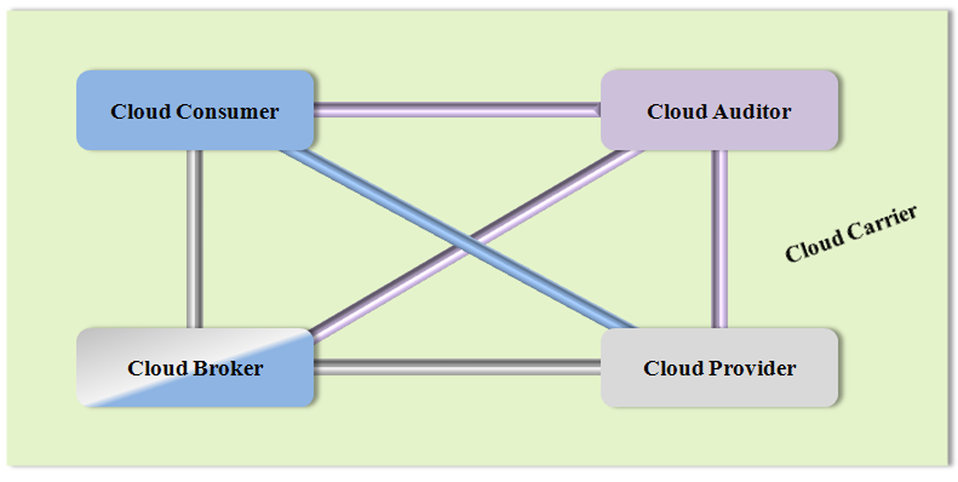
Cloud computing involves five actors: consumer, provider, auditor, broker and carrier. This illustration shows the possible communication paths between them.